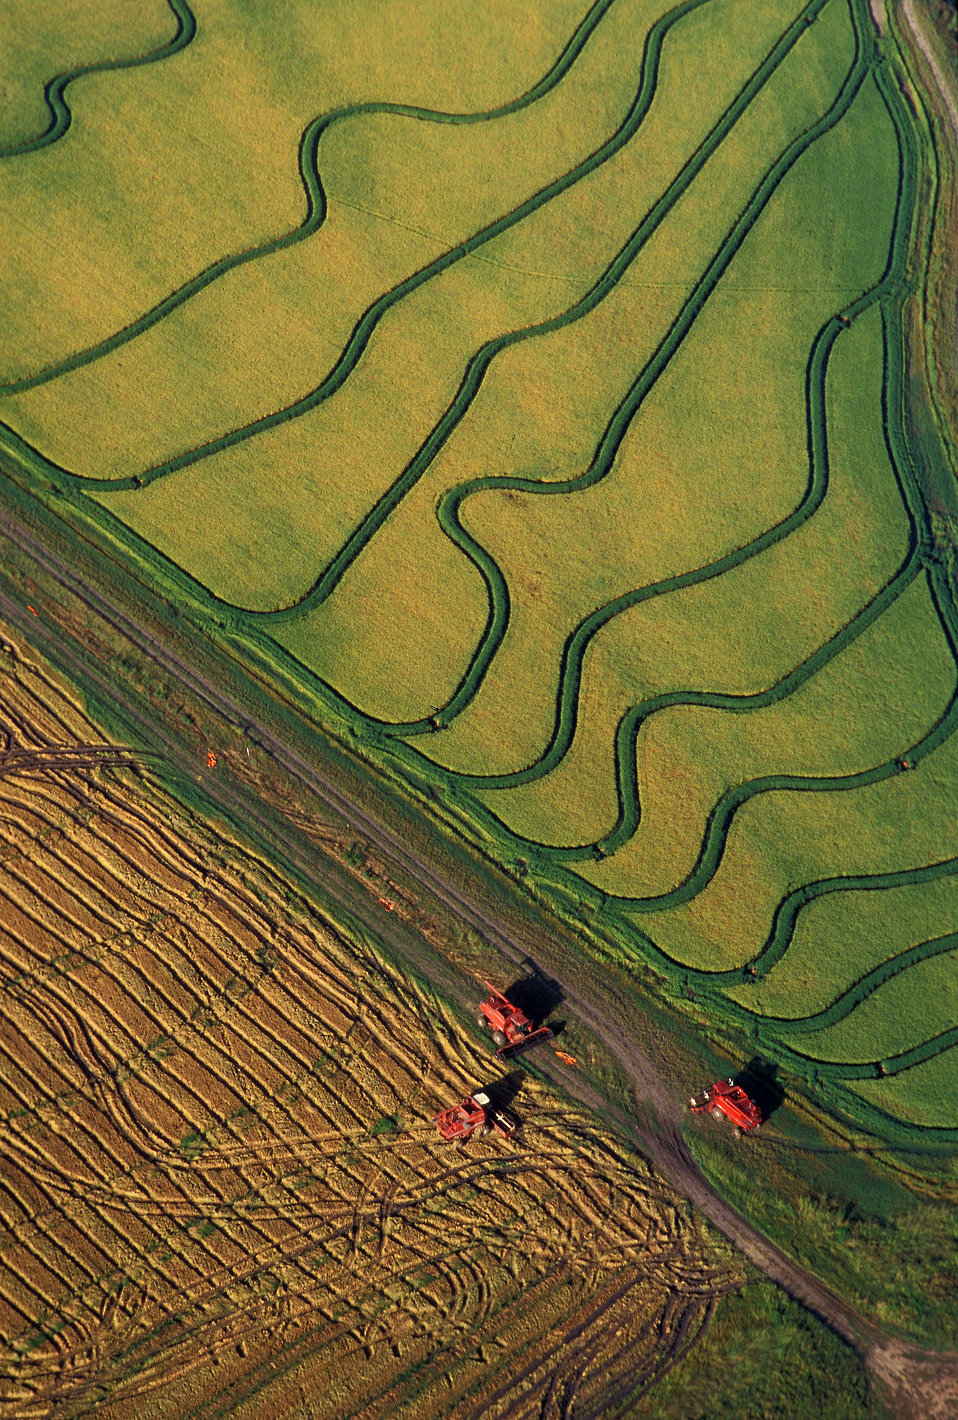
This is an aerial view of rice harvesting in Fort Bend County, TX.